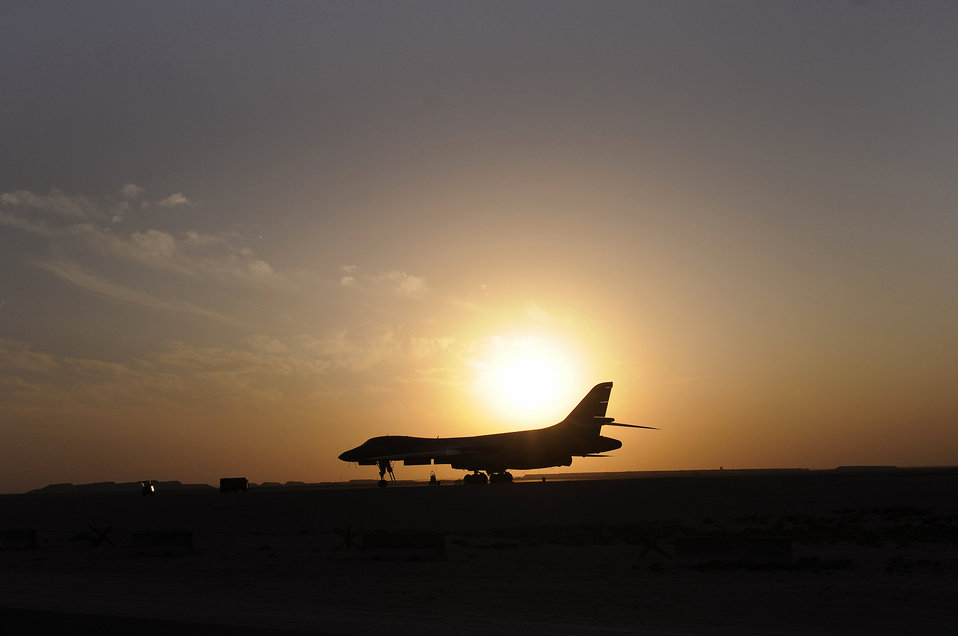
Feb. 9 airpower summary: B-1Bs protect ground forces

The setting sun silhouettes a B-1B Lancer recently at an undisclosed air base in Southwest Asia. Carrying the largest payload of both guided and unguided weapons, the multi-mission B-1 is the backbone of America's long-range bomber force.